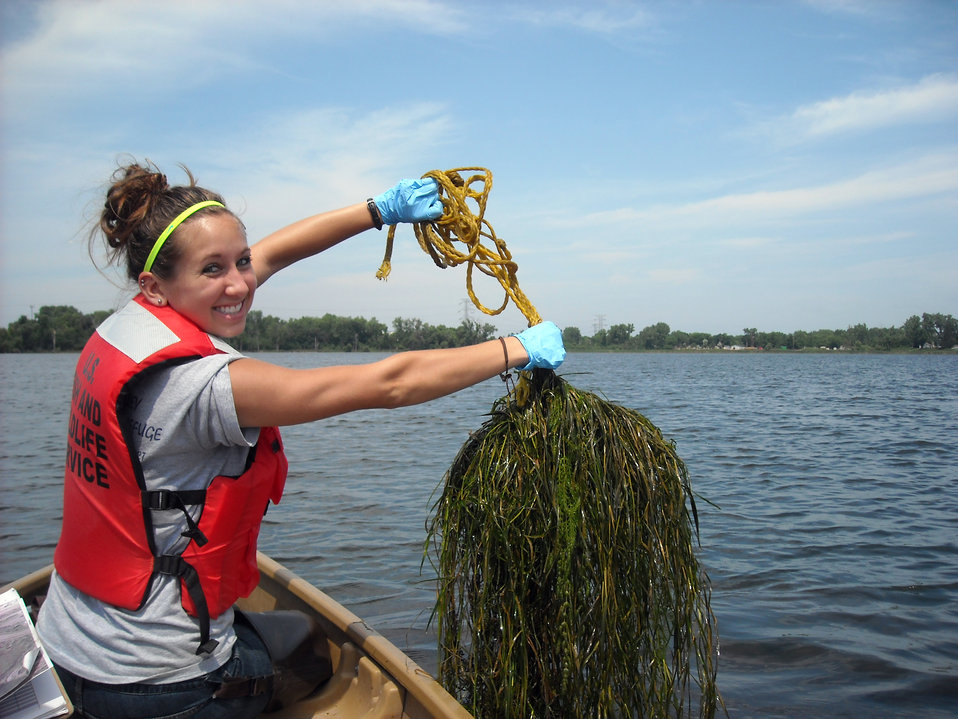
Full Rake

A rake was tossed to collect aquatic vegetation for identification.